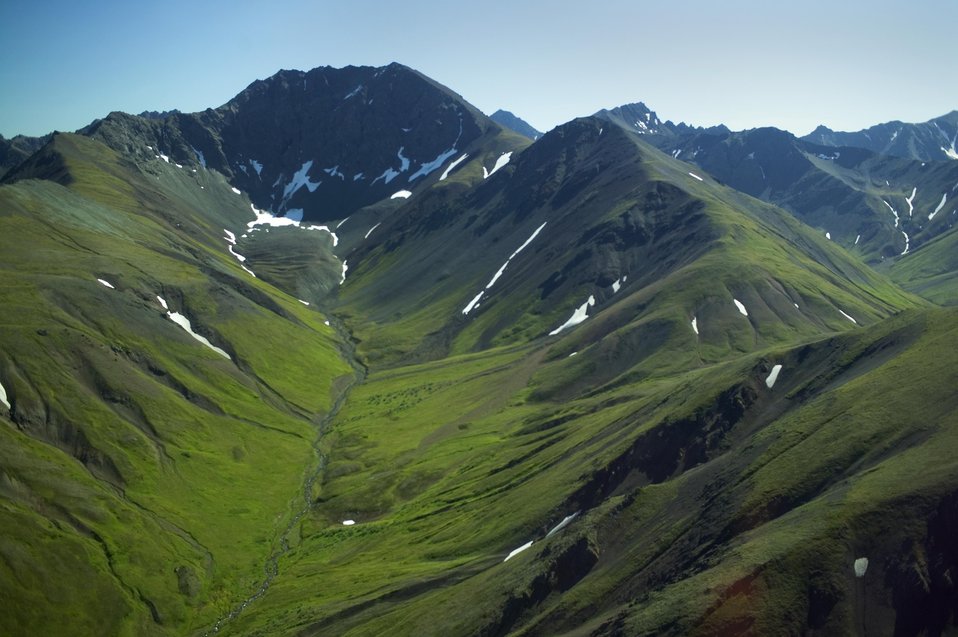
Togiak Nation Wildlife Refuge